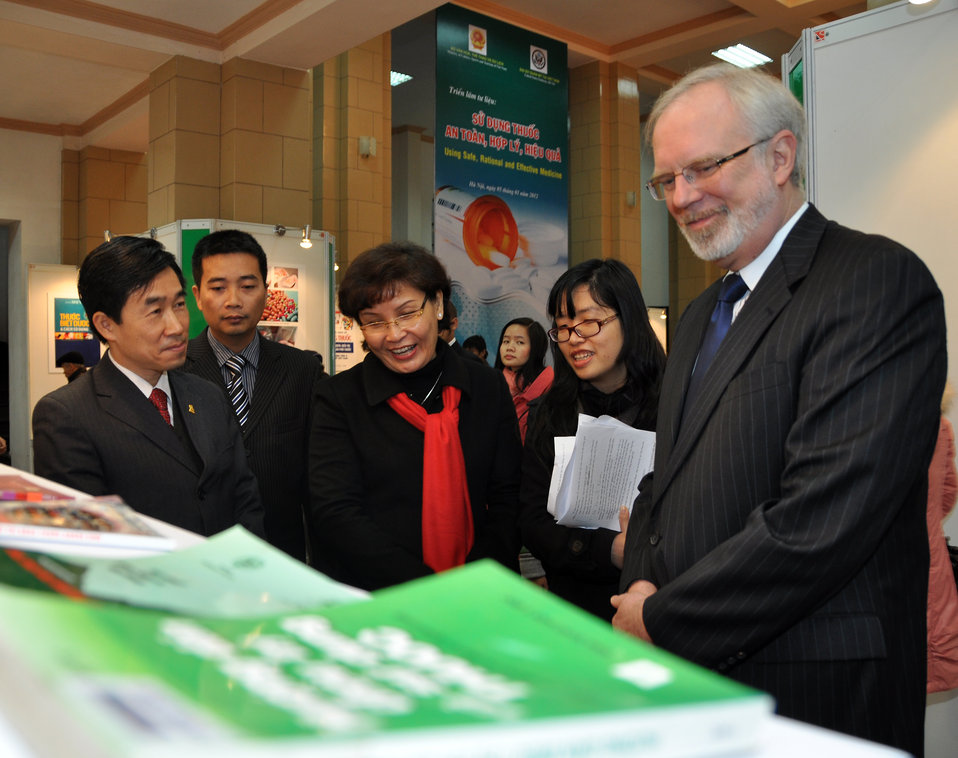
U.S. Ambassador David Shear opens safe medicine exhibition in Hanoi

Safe Medicine Exhibition